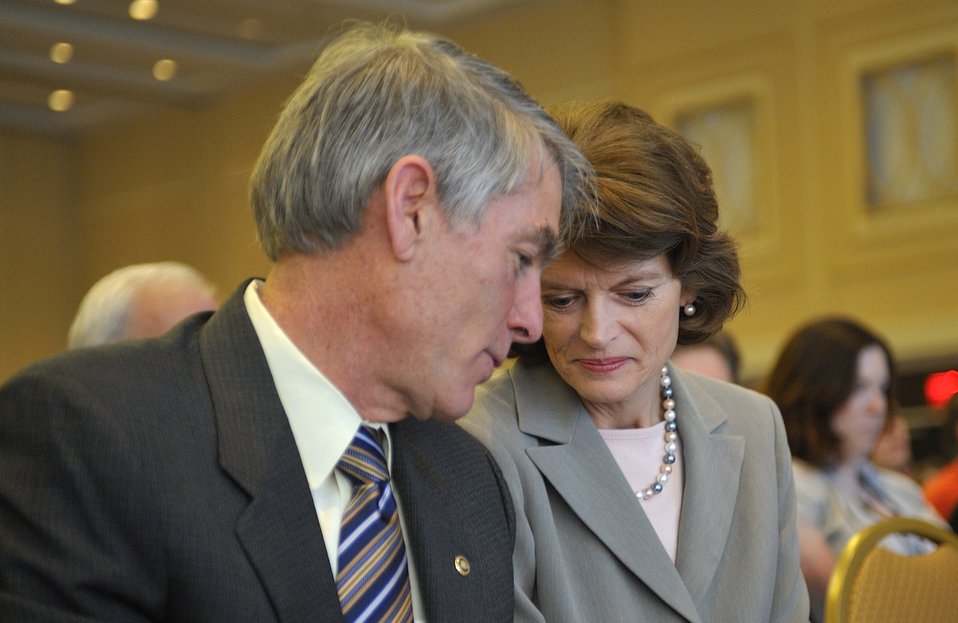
ARPA-E Energy Innovation Summit 2011, 29 of 83

Senator Mark Udall (D-CO) and Senator Lisa Murkowski (I-AK) during the keynote of Steven Chu, Secretary, United States Department of Energy.